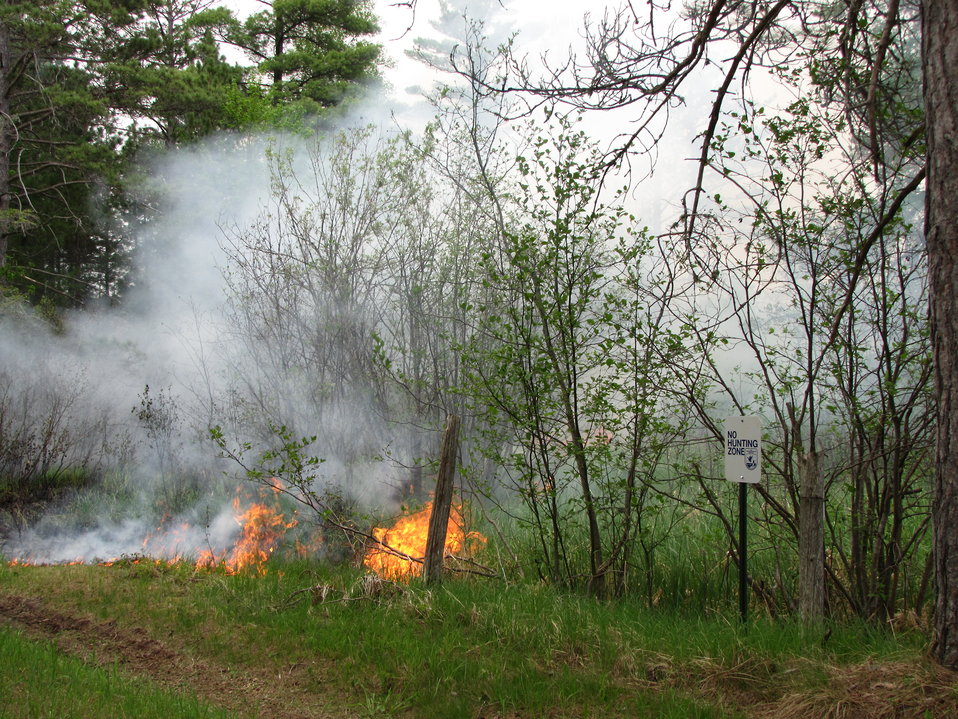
The Back Fire

Lighting a back fire off Pine Creek Road to keep the main fire contained.